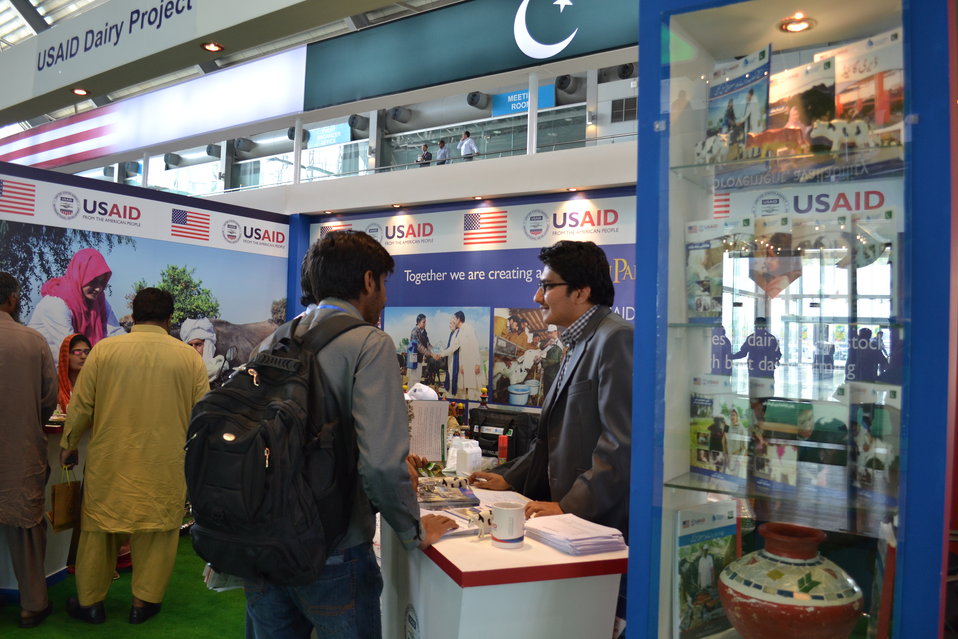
Dairy Project at Dawn Expo 2014